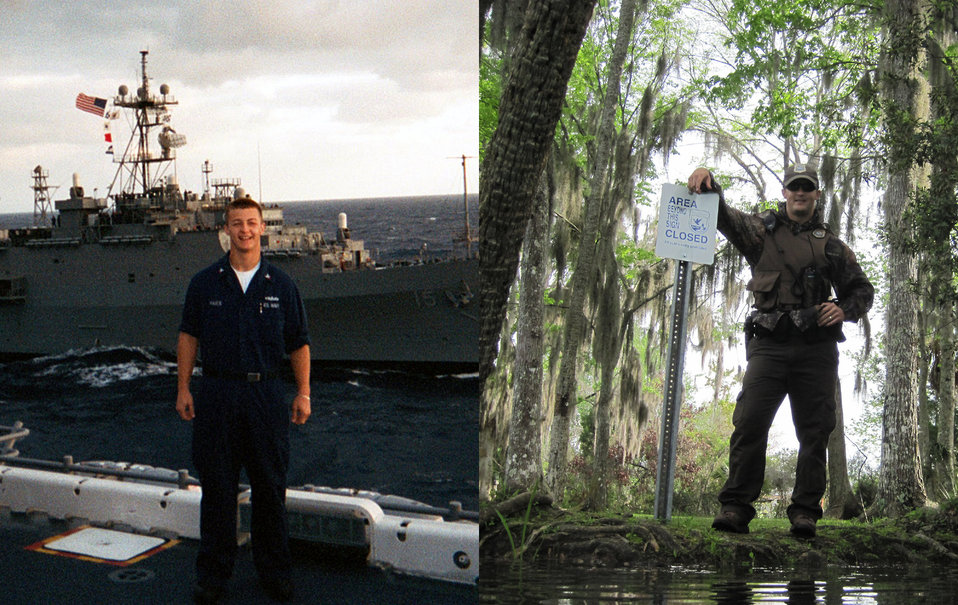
Ryan Maier (left)AS2(SW) Ryan Maier onboard USS Kearsarge LHD-3 with his ship, the USS PONCE LPD-15, behind him while crossing the Atlantic. USFWS Federal Wildlife Officer (right) Ryan Maier on patrol in a closed area on Crystal River National Wildlife Refuge..
At just 18 years old, Ryan Maier entered the U.S. Navy in February 1998 and attended Recruit Training Command in Great Lakes, IL, and went from being a Deck Seaman to 2nd Class Petty Officer (E-5). He served on two sixth month deployments to the Mediterranean, participating in support of the NATO Kosovo Campaign. Maier was also on deployment in the Adriatic Sea during the September 11, 2001 terrorist attacks. Some port visits included St. Thomas (USVI) Bahamas, Puerto Rico, Spain, Morocco, France, Italy, Sicily, Greece, Turkey, Cyprus, Croatia, Majorca, and Malta. .
In February 2002, Maier reluctantly moved back home to Florida and left the Navy. Maier finished his Associate’s Degree and hired on as a State Game Warden. After five and a half years with the state and finally finishing his Bachelor’s Degree, Maier found a position at the Crystal River National Wildlife Refuge in December of 2008 as a Federal Wildlife Officer. Maier utilized his status as a veteran and participated in the service VRA program. He attended FLETC in 2009 and was an accomplished student, recognized as the top academic score for his class, completed all required training, and after a two-year term appointment, became a permanent employee. .
Maier’s current responsibilities include visitor safety, natural resource protection, and public education of local laws related to manatee interaction. Married for eight years, he and his wife Jessica have two children.